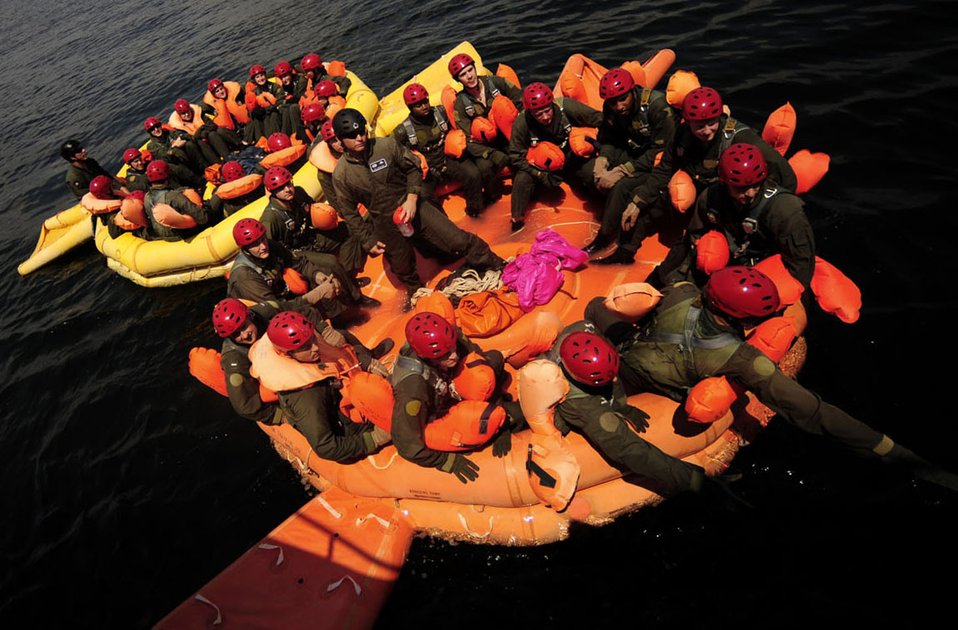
Water survival

Airmen learn skills to maintain life and the proper procedures for being extracted from an isolation situation by maneuvering through the Pensacola Bay in a life raft Sept. 14, 2011, during the Water Survival Course at Naval Air Station, Pensacola, Fla. The three-day course consists of classroom academics; zipline and canopy training; open-ocean drag and drop; parasailing and raft training.